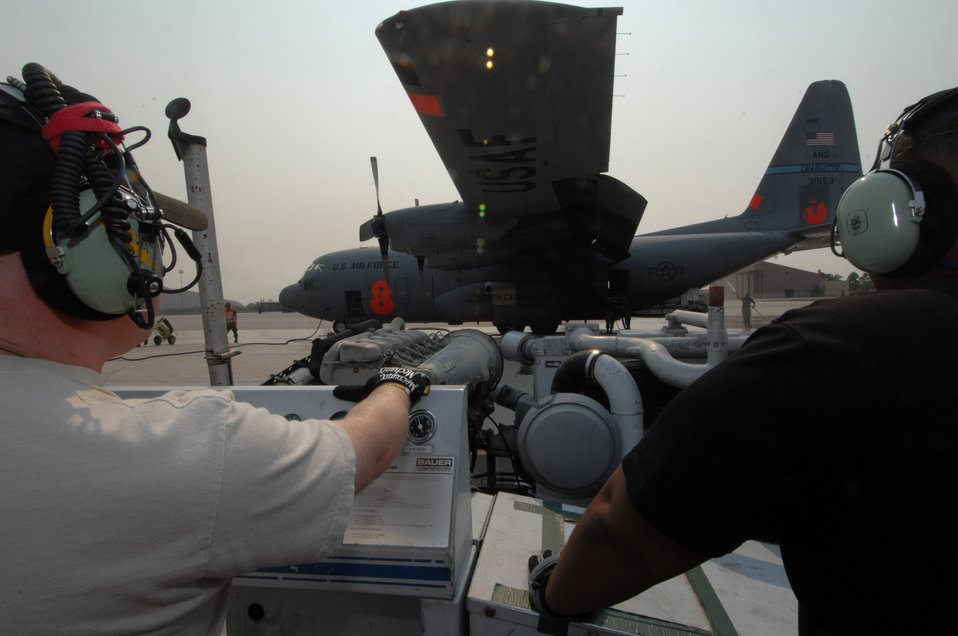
Guard, Reserve aid in California firefighting efforts

Tech. Sgt. David Weathers and Tech. Sgt. Shaun McCullough monitor the fire retardant levels of the Modular Air Fire Fighting System on a C-130 Hercules as it prepares to launch Oct. 25 from Channel Islands Air National Guard Base, Calif. Sergeants Weathers and McCullough are assigned the 145th Maintenance Squadron from Charlotte, N.C. Air Force Reserve Command and Air National Guard Airmen are participating in the Southern California firefighting effort. Sergeant Lefler is assigned to the 145th Maintenance Squadron from Charlotte, N.C.